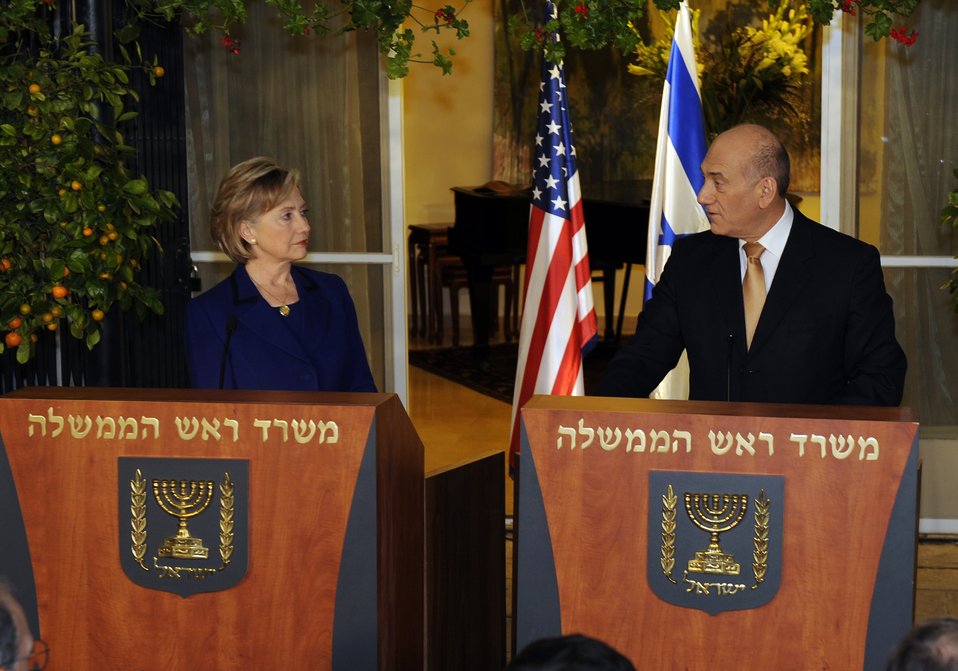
Secretary Clinton Visits Israeli Prime Minister Residence

U.S. Secretary of State Hillary Rodham Clinton during a statement at Prime Minister Ehud Olmert's Residence, Jerusalem, March 3, 2009.